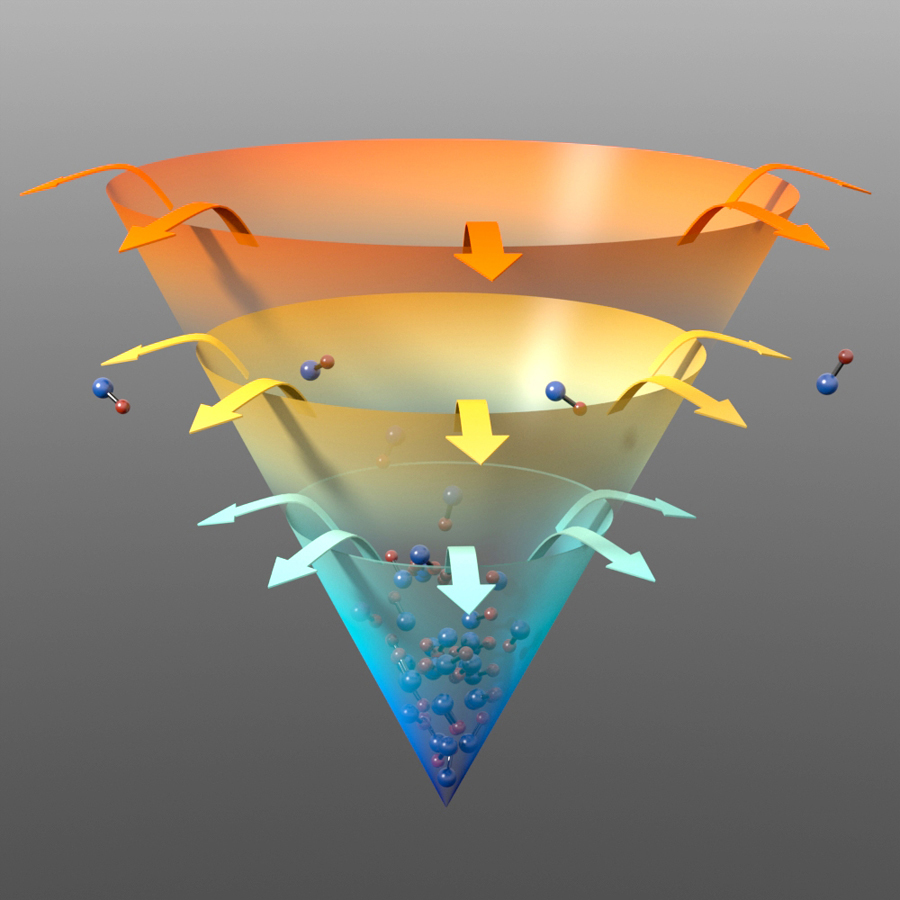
Evaporative Cooling

JILA researchers developed a new magnetic trap and a new technique to achieve 'evaporative cooling' of hydroxyl molecules (one hydrogen atom bonded to one oxygen atom). A microwave pulse at a specific frequency converts hot molecules inside the trap to a slightly different energy state. A small electric field is pulsed on briefly to destabilize and eject these converted molecules from the trap. As the microwave frequency is slowly altered, molecules distributed inside the trap (which has a varied magnetic field strength) are progressively converted and removed from the top of the trap, where molecules are hotter, to the bottom, where molecules are cooler.